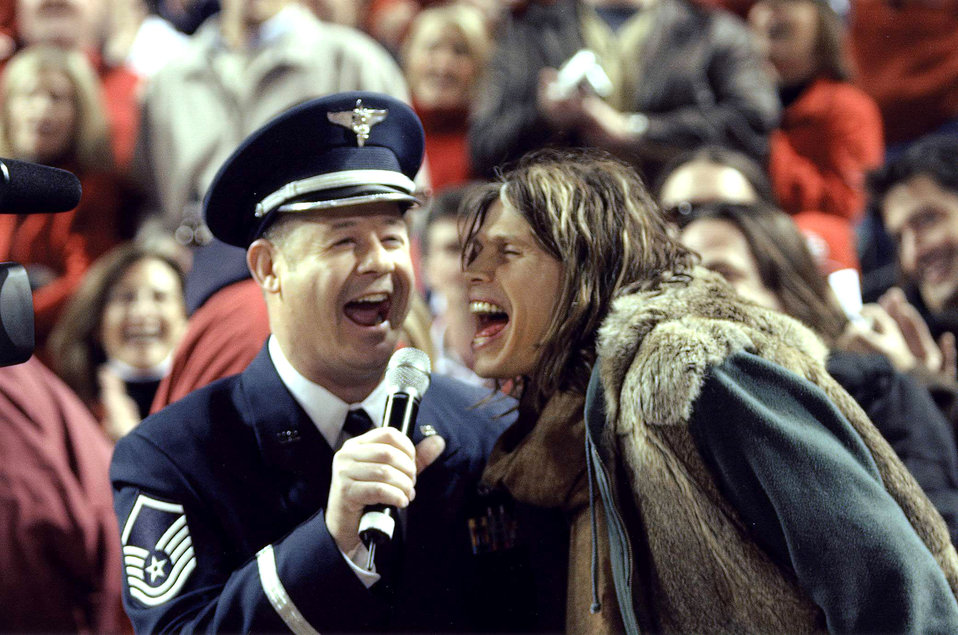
Take me out to the ball game

Master Sgt. Steve Thulon, a vocalist with the U.S. Air Force Band of Mid-America, sings with Steven Tyler, lead singer of Aerosmith, at a National League playoff game Oct. 14 at Busch Stadium in St. Louis. The two sang